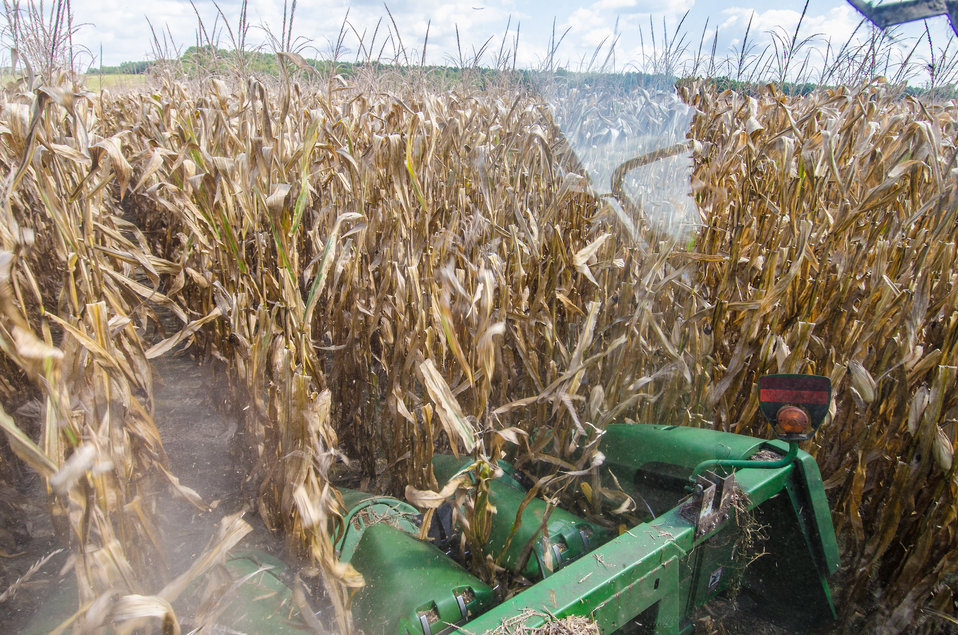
The view out of the operators cab of a corn harvester as corn stalks are cut and the kernels and cornstalks separated during the harvest on Friday, Sept. 20, 2013 harvest, at the John N. Mills & Sons farm; a family owned business located in the Hanover and King William Counties of Virginia. Pleasant Level Farm was the original farm and a Land Grant from King George III of England to Nicholas Mills in 1725. The original acreage has never left the Mills family name and continues to be farmed by the family. Now the farm covers 5,744 acres that produce corn, wheat, soybeans, barley, hay and timber, and pastures a large herd of beef cattle. They have been using conservation and stewardship practices since the 1960s. Some of the efficient practices include no-till planting methods and cover crops to reduce soil erosion and prevent the leaching of nutrients into ground water, as well as livestock stream exclusion. The farm has several conservation easements that aids in the preservation and restoration of wetlands and waterways. For information about the U.S. Department of Agriculture (USDA), please go to www.usda.gov.